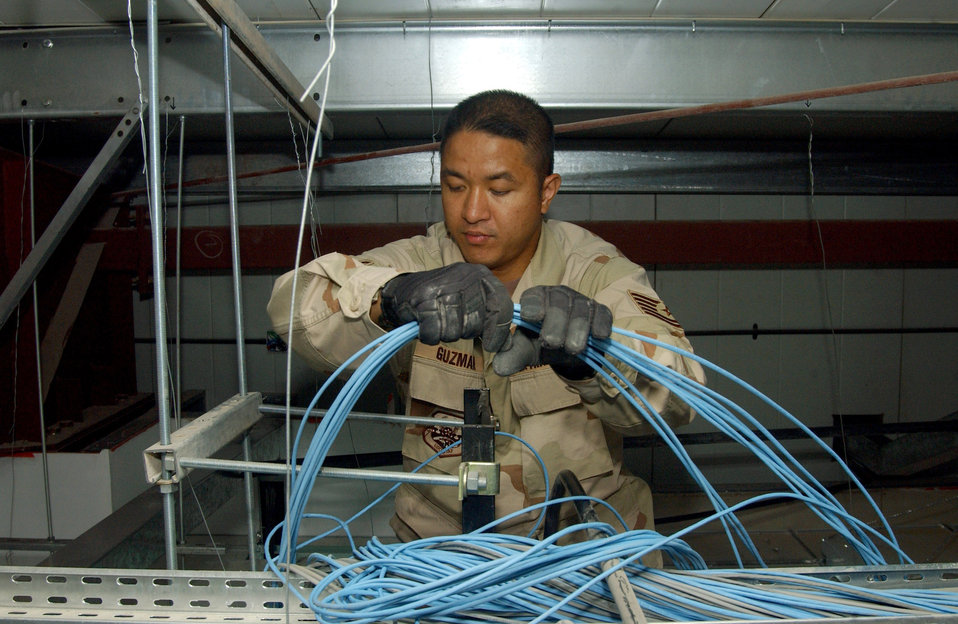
Communication Airmen provide critical wartime assets

Tech. Sgt. Gary Guzman recalls data communication cables in the ceiling of the new Air Force Theater Hospital in July at Balad Air Base, Iraq. The cables will be used in the Morale Welfare and Recreation Cafe used by wounded servicemembers. Sergeant Guzman is an Air Force Theater Hospital systems transition team member with the 332nd Expeditionary Medical Group's Expeditionary Medical Support Squadron. Throughout the transition, the Airmen pulled more than 50,000 feet of computer cables to set up computers, phones and paging systems.